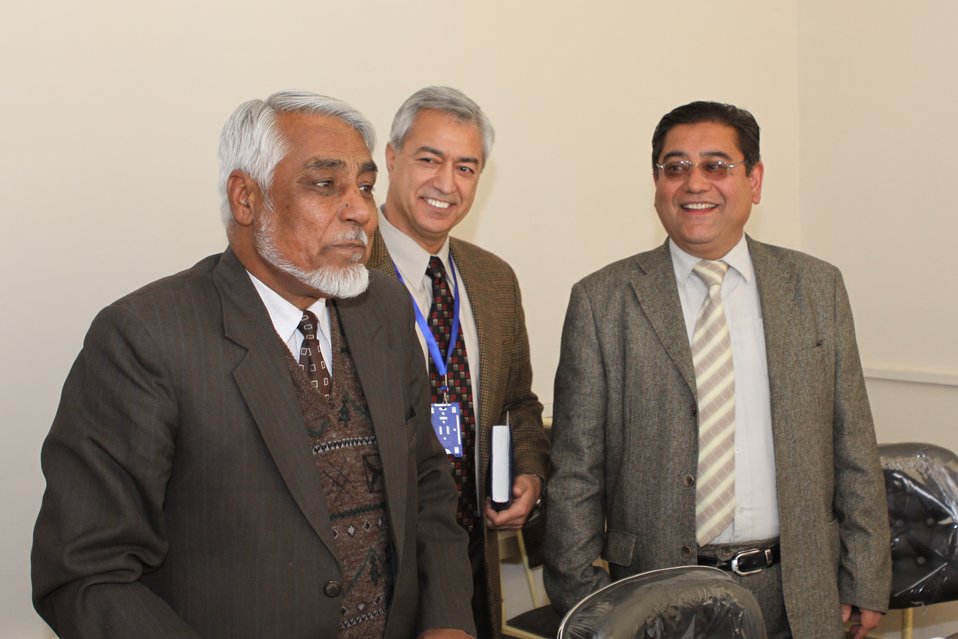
Female University Students Complete Internship

Kabul, Afghanistan | March 16, 2011 – In response to a demand for qualified Afghan engineers, Kabul University celebrated completion of an intensive five-month Mentor Protégé Training Program today by 10 female fourth year university students. The Training Program is a joint effort between the Government of the Islamic Republic of Afghanistan, the U.S. Agency for International Development (USAID), and the Universities of Kabul, Kandahar, Alberoony in Kapisa, Shiekh Zayed in Khost. The graduation ceremony highlighted collaboration with these national institutions in building the technical skills of young Afghans, made possible by USAID.

Four of the interns are engineers, while the remaining six are from the faculties of computer science, economics, and psychology.

Speaking about the event, H.E. Minister of Public Works Abdul Qudus Hamidi said, “The future of Afghanistan lies in developing the skills of our youth, and the engineering skills of these graduates today represent a small but important step forward for the country.”

Keynote speakers at the ceremony included H.E. Deputy Minister of Higher Education Abdul Rahim; USAID Senior Deputy Mission Director Robert Hellyer; and Chancellor of Kabul University Professor Hamidullah Amin. Approximately 150 people, including current and former students attended the graduation.

Launched last year, the Mentor Protégé Training Program has provided qualifying students the opportunity to intern with USAID’s Strategic Provincial Roads-South and East Afghanistan project and gain practical experience in a real work environment. The goal of the program was to offer interns the opportunity to gain hands-on experience to reinforce their formal studies. A total of 30 students from four national universities have benefitted from this program.

“The promotion of women’s rights is integrated into the overall U.S. Government development strategy and can be found in key programs, including education, healthcare, security, rule of law, political participation, agriculture, and economic development,” said Robert Hellyer. “The U.S. Government is committed to the Afghan leadership of programs that directly enhance development, particularly as it relates to women’s issues.”

This event also highlighted the learning achievements of students and emphasized the importance of hands-on internship programs. The curriculum is designed to instill students with the knowledge and confidence to qualify for engineering positions upon completion of their fourth year at their respective universities.